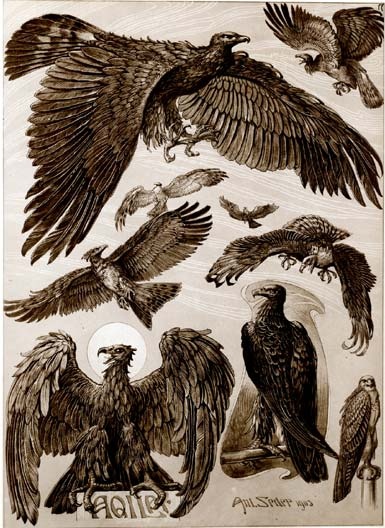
Deutsch: Lithografie von Anton Seder aus dem Jahr 1903 Lithography from 1903 by Anton Seder